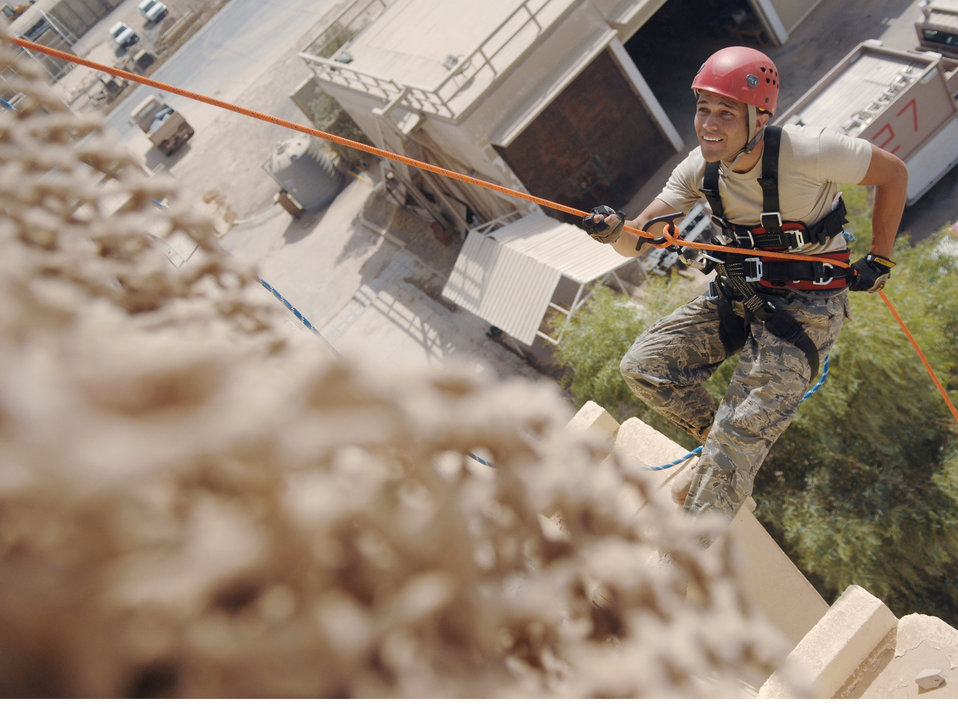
No fear

Airman 1st Class Jared Snell rappels down the side of the control tower Aug. 20 at Joint Base Balad, Iraq. The training is a refresher course allowing firefighters to practice knots, anchors and belay techniques. Airman Snell is a firefighter with the 332nd Expeditionary Civil Engineer Squadron.